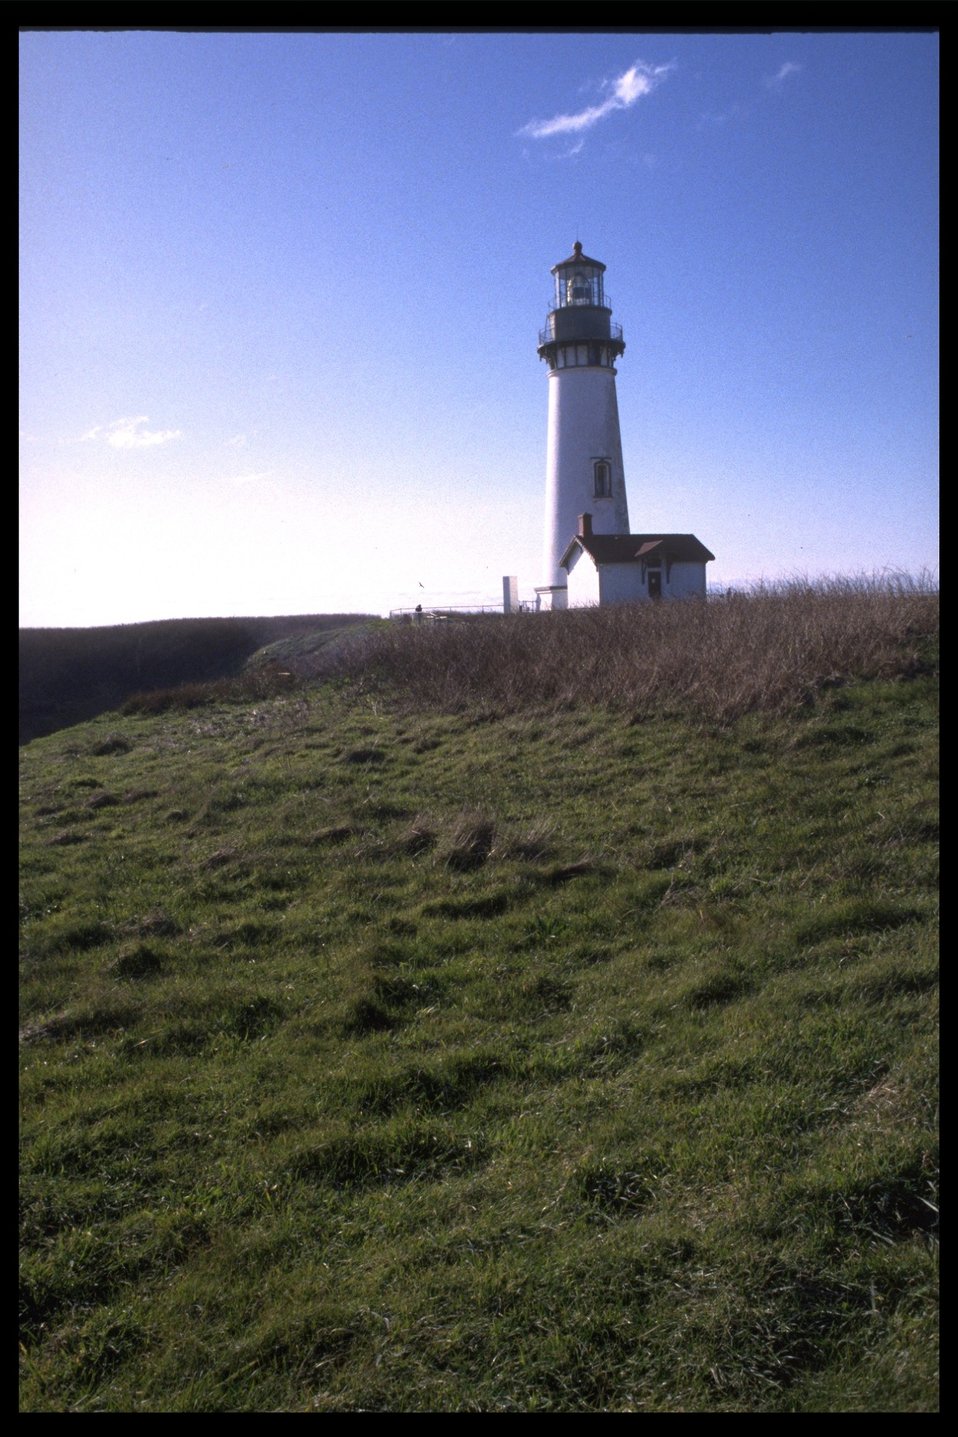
Yaquina Head Lighthouse.